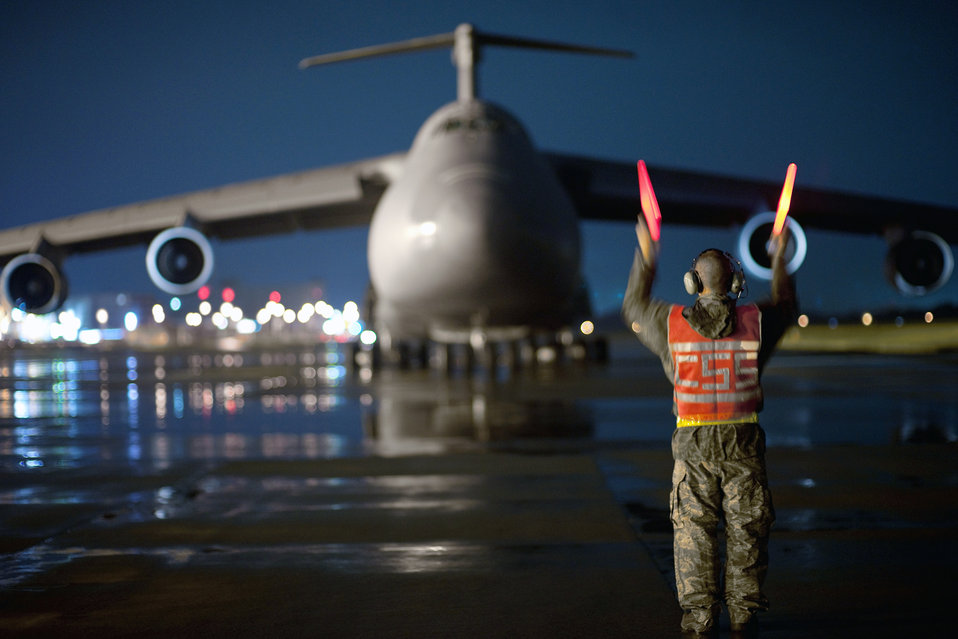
Rapid loading for the fight

Staff Sgt. Dustin McComas marshals a C-5 Galaxy Sept. 15, 2010, after it lands at Yokota Air Base, Japan. Sergeant McComas is a loadmaster with the 730th Air Mobility Squadron there.